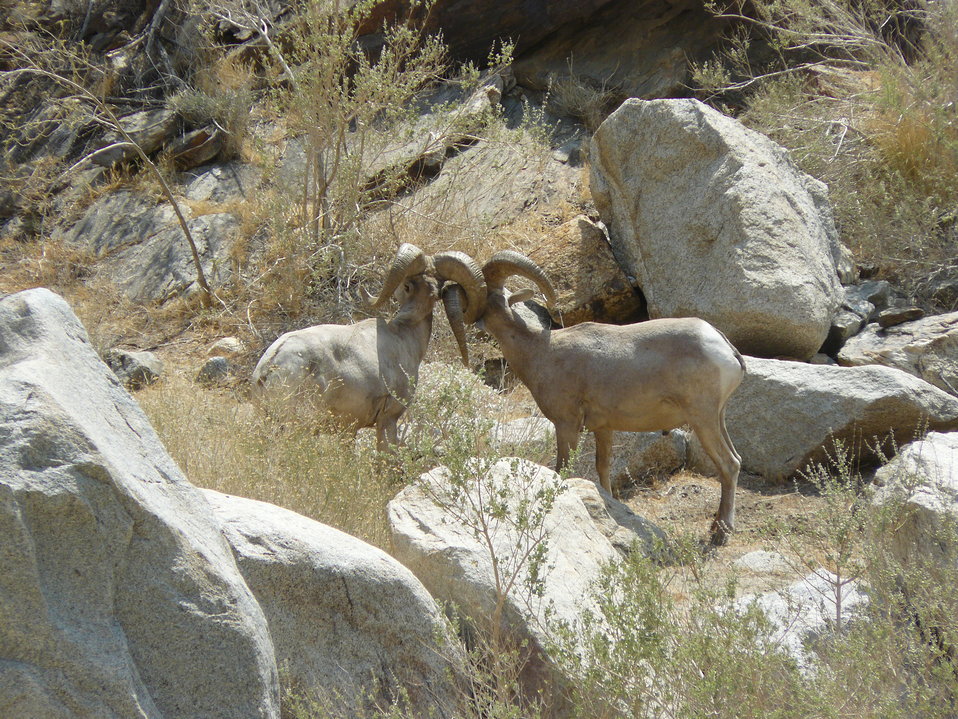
Two rams square off

When competing for females, rams will often charge each other and butt heads.